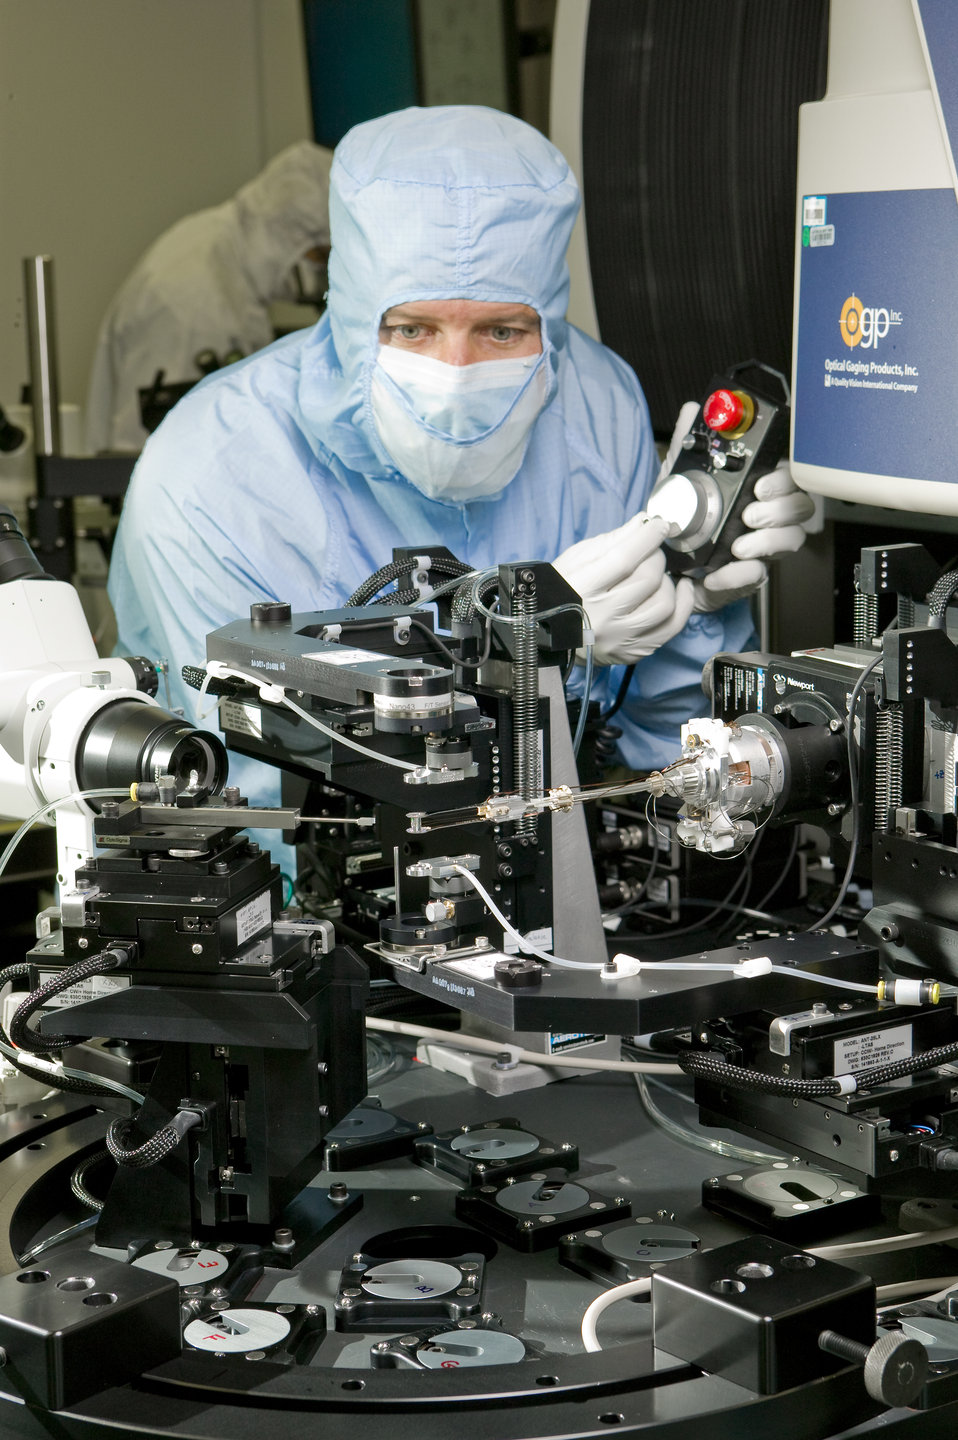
A systems engineer operates the precision robotic assembly machine at Lawrence Livermore National Laboratory.